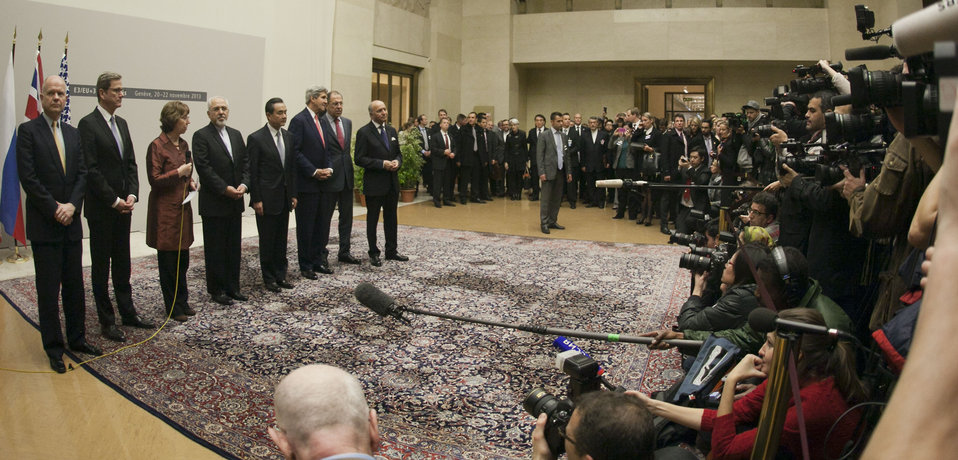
P5 1 Talks With Iran in Geneva, Switzerland

U.S. Secretary of State John Kerry and his fellow P5 1 foreign ministers, as well as Iranian Foreign Minister Javad Zarif, center, listen as European Union High Representative Catherine Ashton speaks at United Nations Headquarters in Geneva, Switzerland, after the group concluded negotiations about Iran's nuclear capabilities on November 24, 2013.